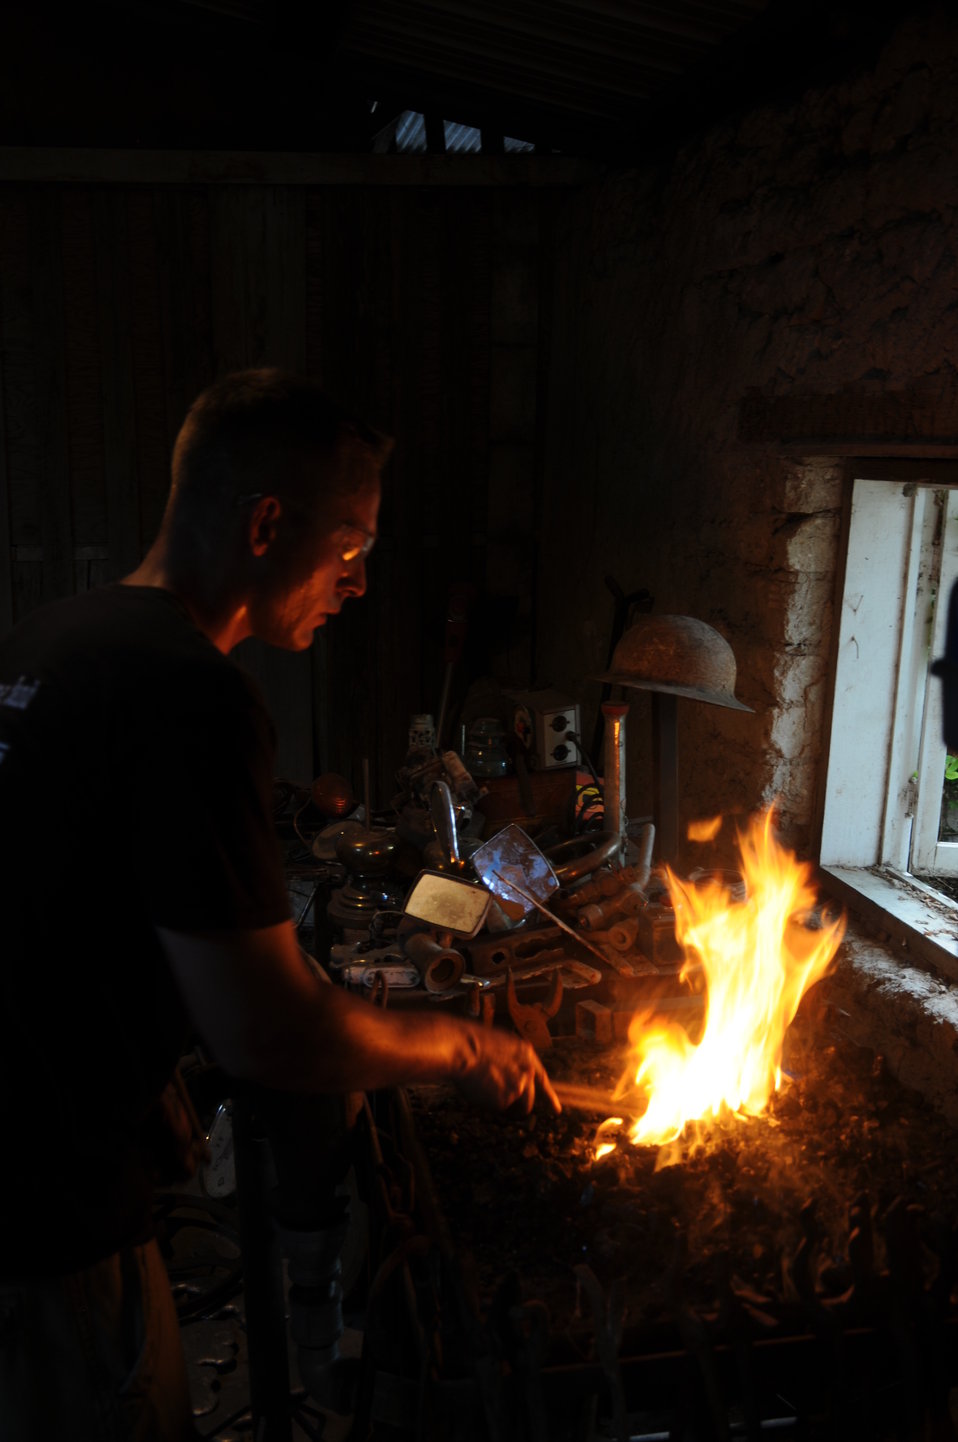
Forging lasting art

Staff Sgt. Grant Dupill, a medical technician in the 47th Medical Group, heats a piece of metal over a fire as he prepares to bend it.